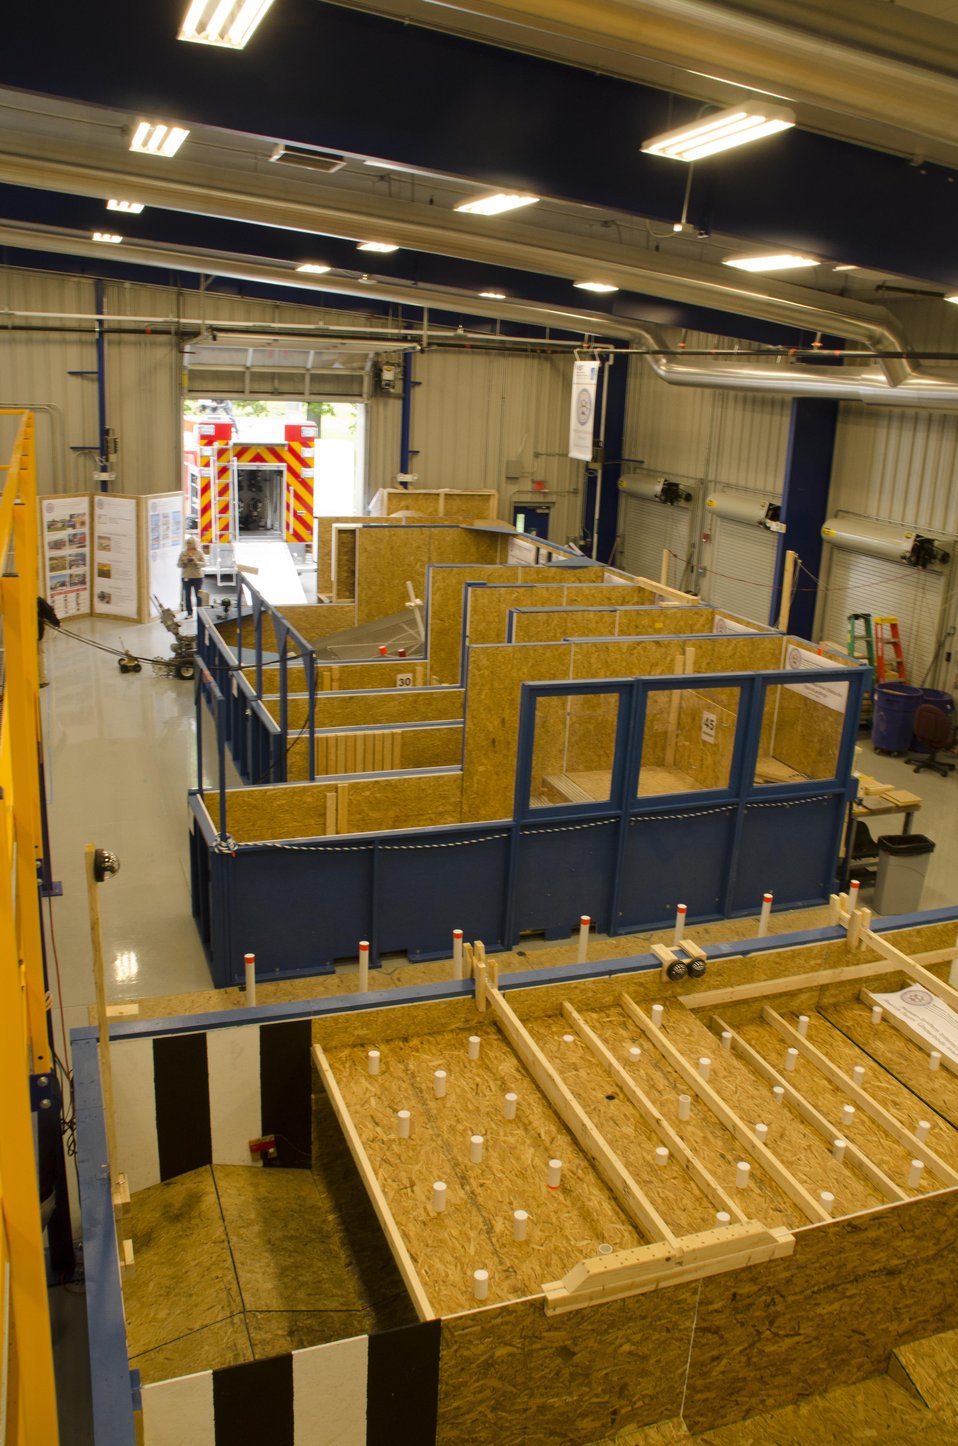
Robot Test Facility - Test Facility Bays

The test facility contains an array of stations that simulate obstacles and challenges robots could encounter at an emergency or disaster scene.

Development of test methods at the NIST Robot Test Facility is funded in part by the NIST Office of Law Enforcement Standard's Counterterrorism and Response Technologies program.